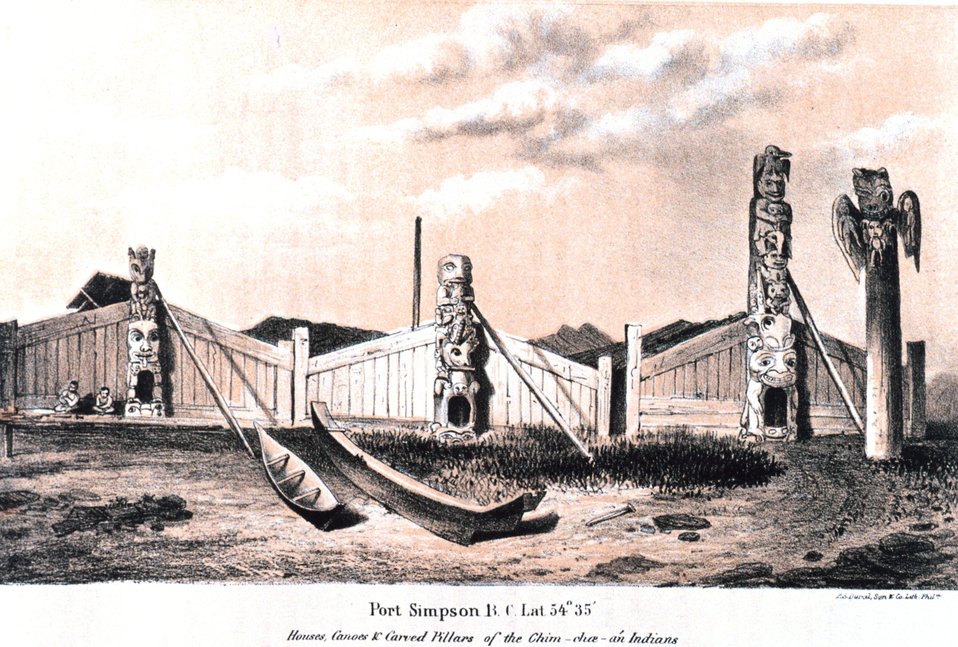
Native dwellings and totem poles at Port Simpson, British Columbia. In: 'Coast Pilot of Alaska, (First Part,) ....' by George Davidson, 1869. P. 18. Library Call Number VK943 .N3 1st 1869.